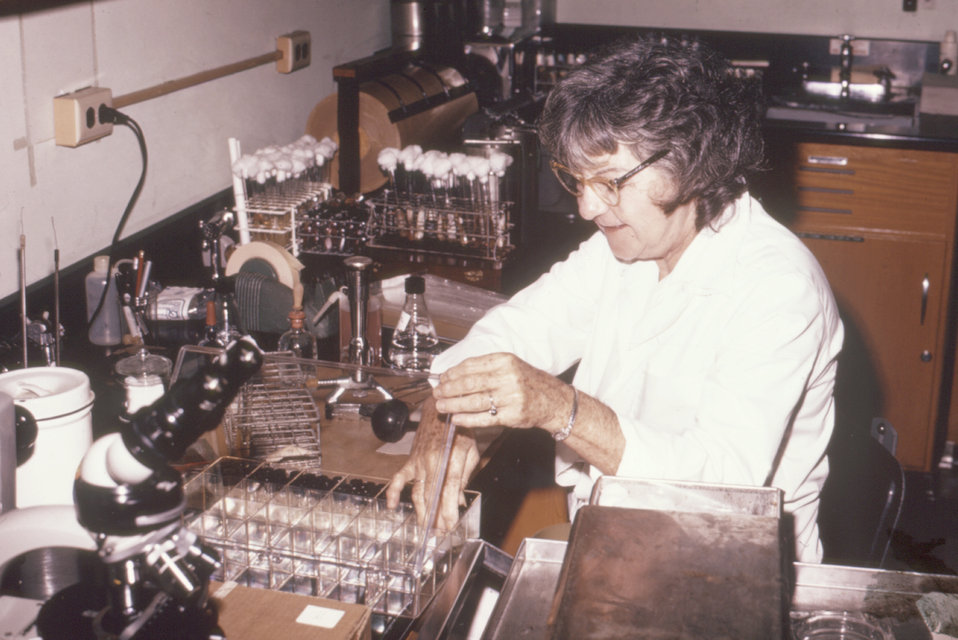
Here, laboratorian Mrs. Virginia Sherall, formerly of the CDC's Mycology Division, Bureau of Labs carries out an investigation.